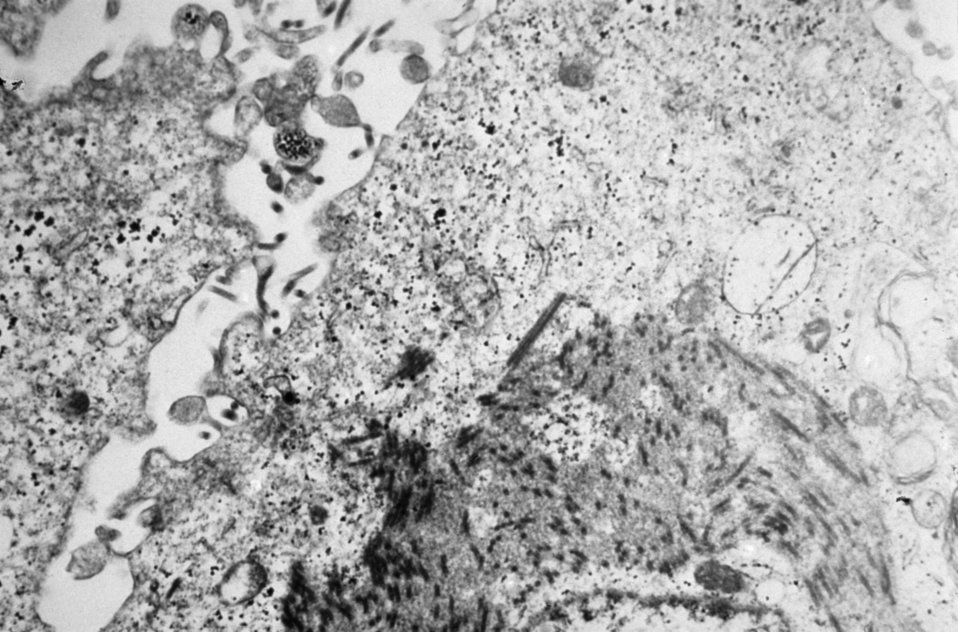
Electronmicrograph shows a thin section containing the Ebola virus, the causative agent for African Hemorrhagic Fever.